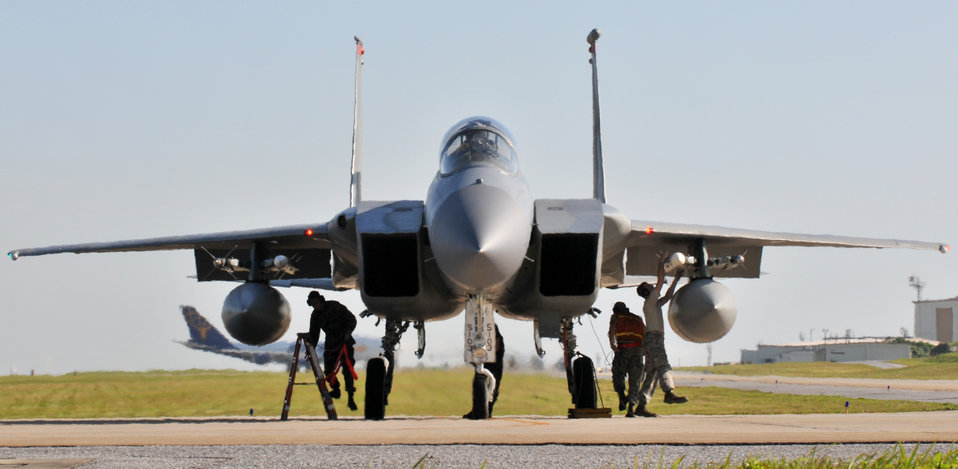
Joint Bilateral Training

A small group of Airmen from the 67th Aircraft Maintenance Unit ensure F-15C Eagles get one final checkup at the end of runway before take-off Feb. 23, 2010, at Kadena Air Base, Japan. Kadena Airmen were participating in joint bilateral training with other U.S. forces and the Japan Air Self Defense Force from Feb. 22 to 26.